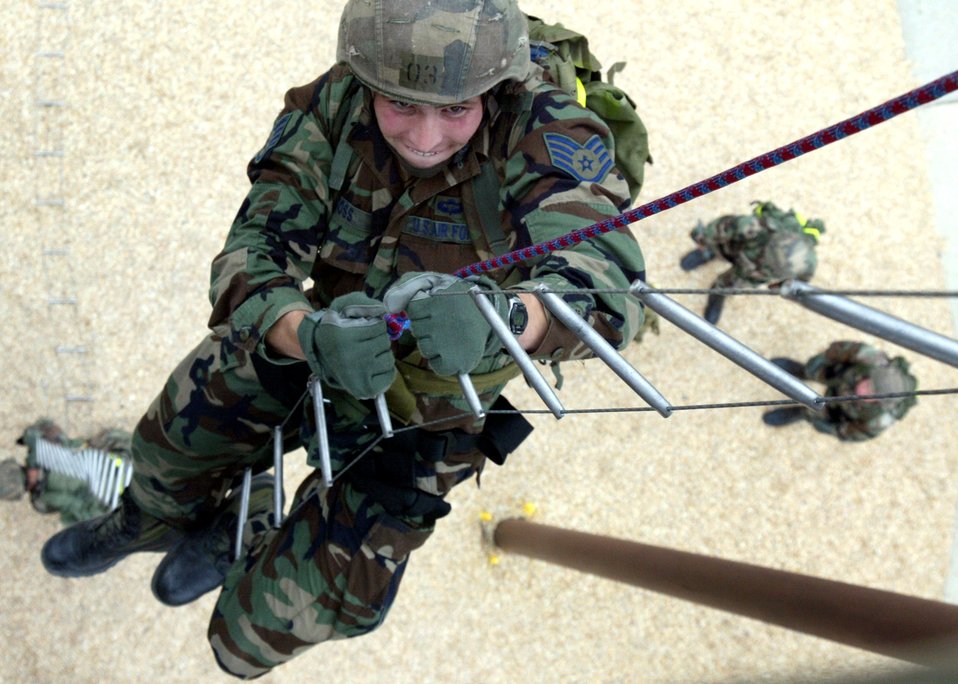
Ladder climb

Staff Sgt. Matt Gross climbs 40-feet up a caving ladder at the combat control school tower at Pope Air Force Base, N.C., on Thursday, May 11, 2006. Students raced up both sides of the tower carrying at least 40-pounds of equipment.